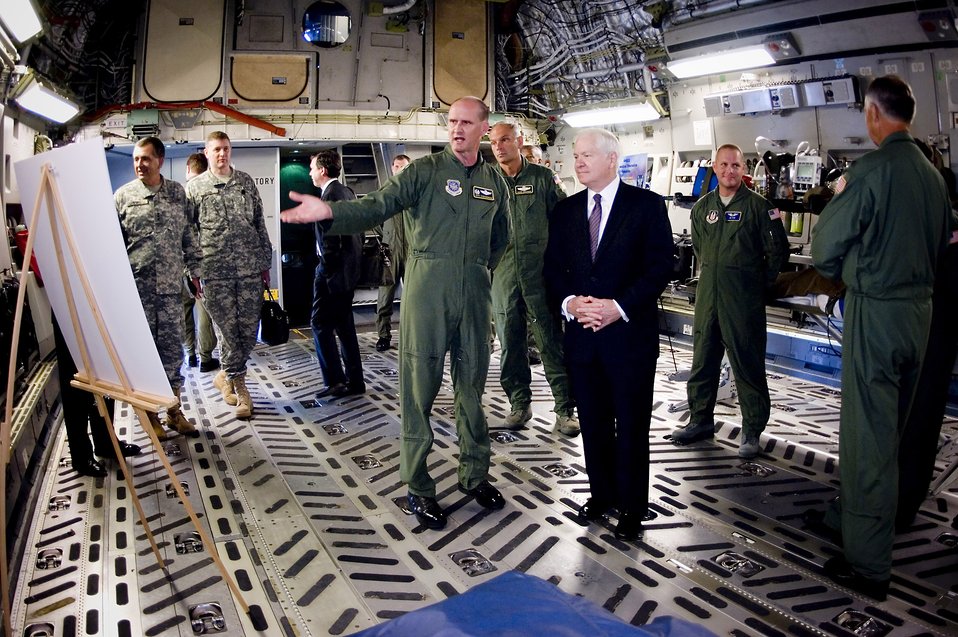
Secretary of Defense Robert M. Gates visit to McChord

Col. Jeffrey Stephenson conducts a mission brief for Secretary of Defense Robert M. Gates during a static display tour inside a C-17 Globemaster III here July 7. Colonel Stephenson is the 62nd Airlift Wing commander.